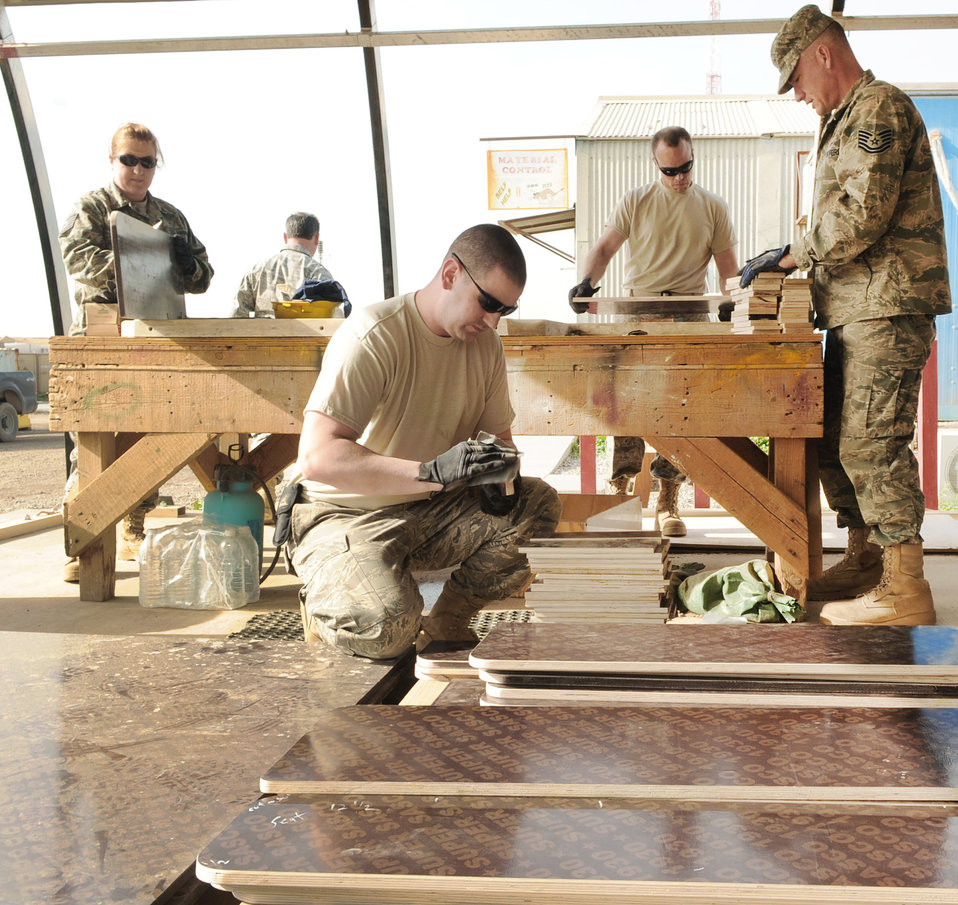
Kirkuk Airmen build desks for Iraqi children

Volunteers from the 506th Expeditionary Civil Engineer Squadron sand down pieces of wood during assembly of school desks for local Iraqi children March 6, 2010, at Kirkuk Regional Air Base, Iraq.